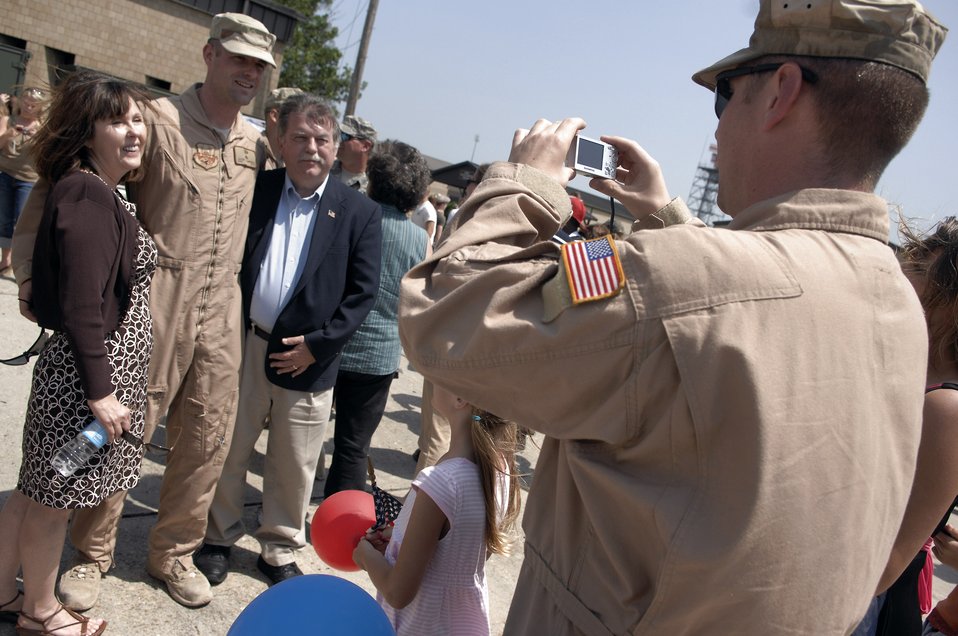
Welcome home!

An Airman from the 823rd Security Forces Squadron takes a photo of another squadron member during a homecoming ceremony April 29 at Moody Air Force Base, Ga. Members of the 823rd SFS recently returned from a six-month deployment at Camp Bucca, Iraq.